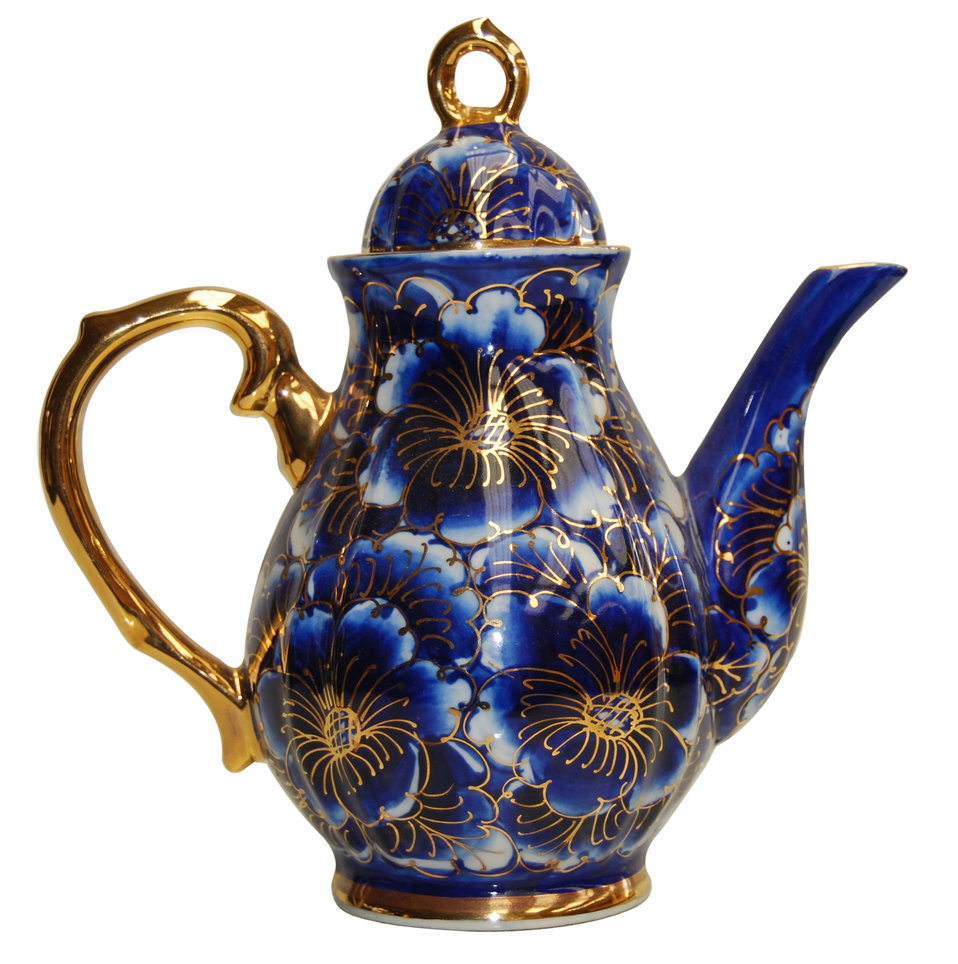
Colourful teapot

Colourful design teapot.